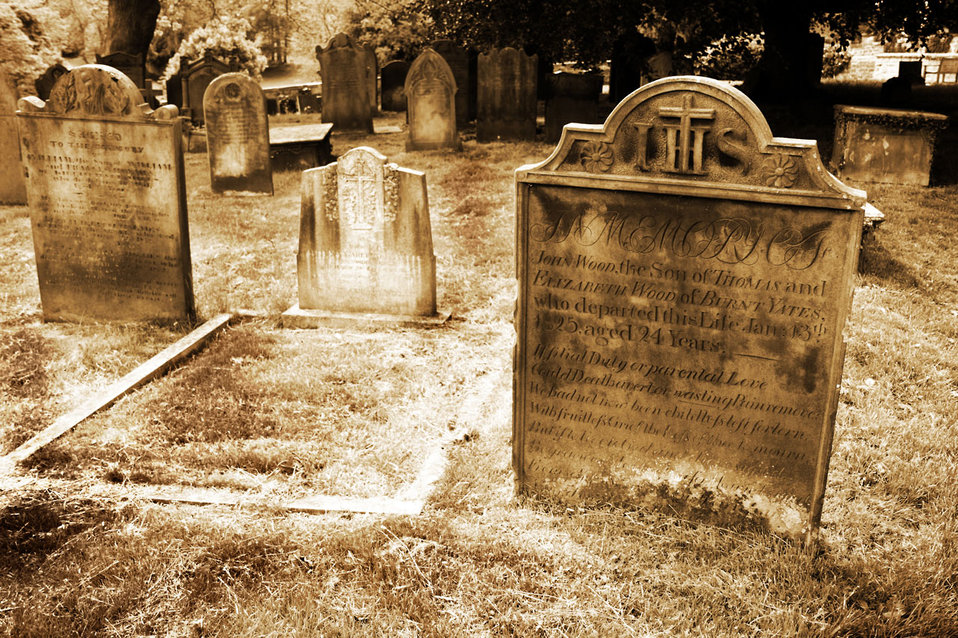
Old grave stones in ripley.